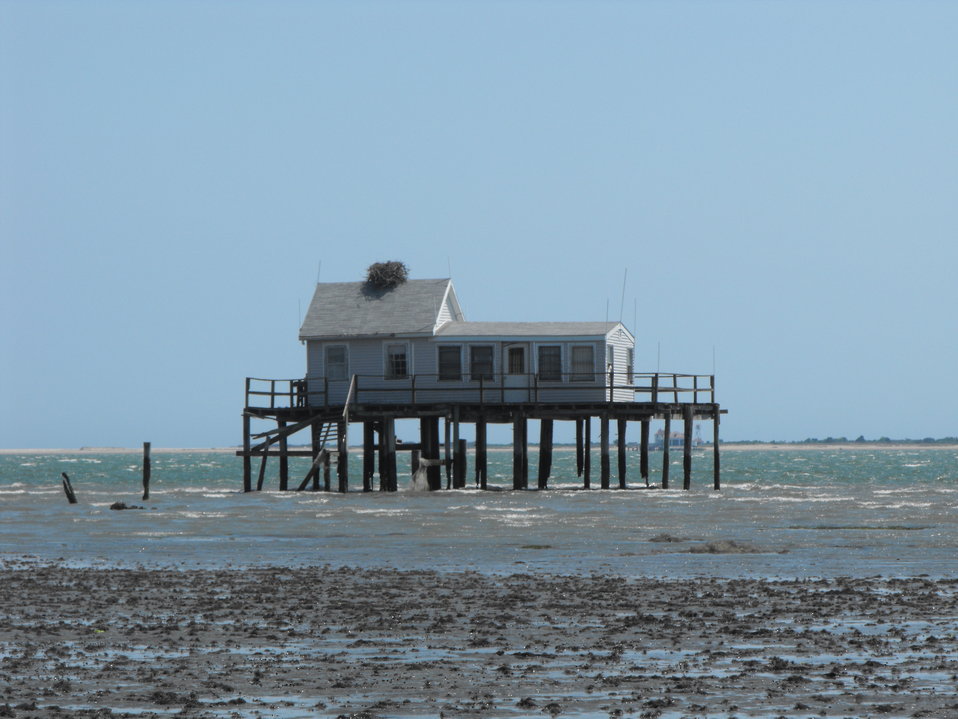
Sunday House and osprey nest

An old 'Sunday House' and an osprey nest off the Woodland Trail at Chincoteague National Wildlife Refuge.